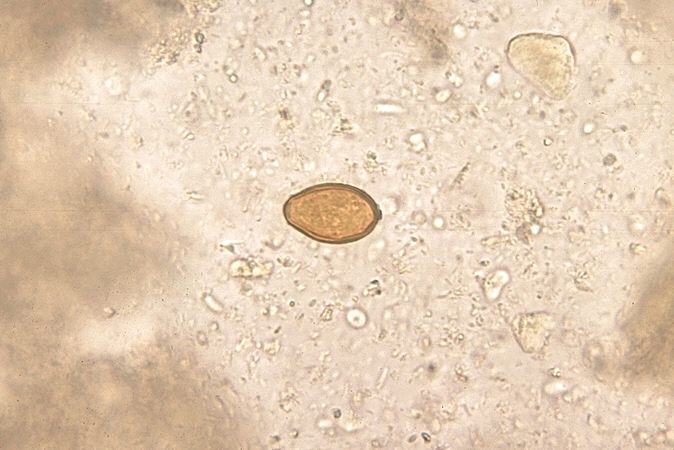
Heterophyes egg. Parasite.